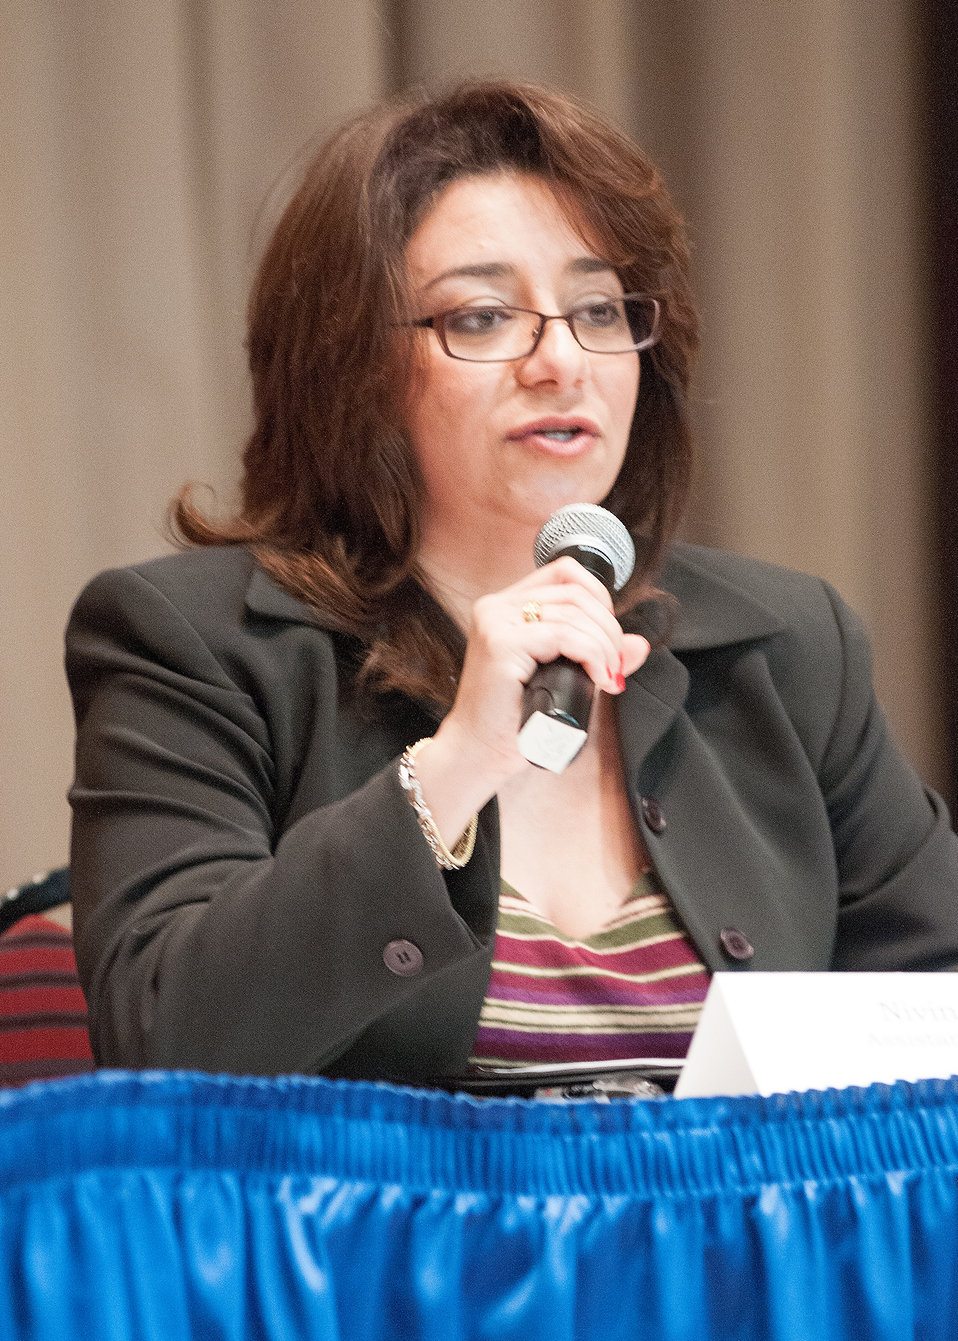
U.S. Department of Agriculture (USDA) Rural Development, Rural Utilities Service (Engineering) Assistant Administrator Ms. Nivin Elgohary was one of four panel members at the USDA’s Office of the Chief Information Officer (OCIO) National Women’s History Month celebration at the USDA Jefferson Auditorium in Washington, D.C. on Thursday, Mar. 14, 2013. The theme of this year’s celebration is, “Recognizing American Women’s Outstanding Contributions to the Field of Science, Technology, Engineering and Mathematics,” commonly referred to as STEM. Each panel member answered four questions: Who in History was a good role model? What were your biggest hurdles being in Science, Technology, Engineering and Mathematics (STEM)? And for women today what is your single piece of advice? All panel members mentioned setting professional and personal goals, strength of family and loving their career choices.